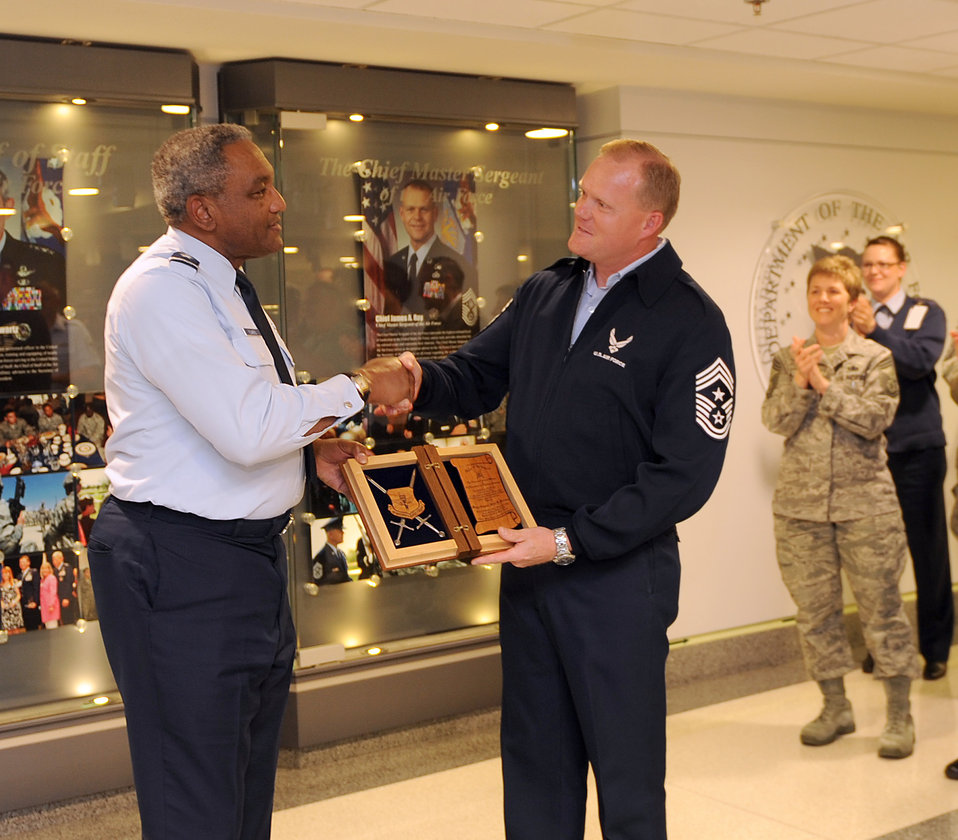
Flowers to receive Order of the Sword

Chief Master Sgt. James Cody, the command chief of Air Education and Training Command, congratulates Maj. Gen. Alfred Flowers, the deputy assistant secretary for budget for the Assistant Secretary of the Air Force for Financial Management and Comptroller office, on his selection as an AETC Order of the Sword recipient. Cody announced the general's selection during a brief ceremony at the Pentagon's Airman's Hall on Nov. 2.